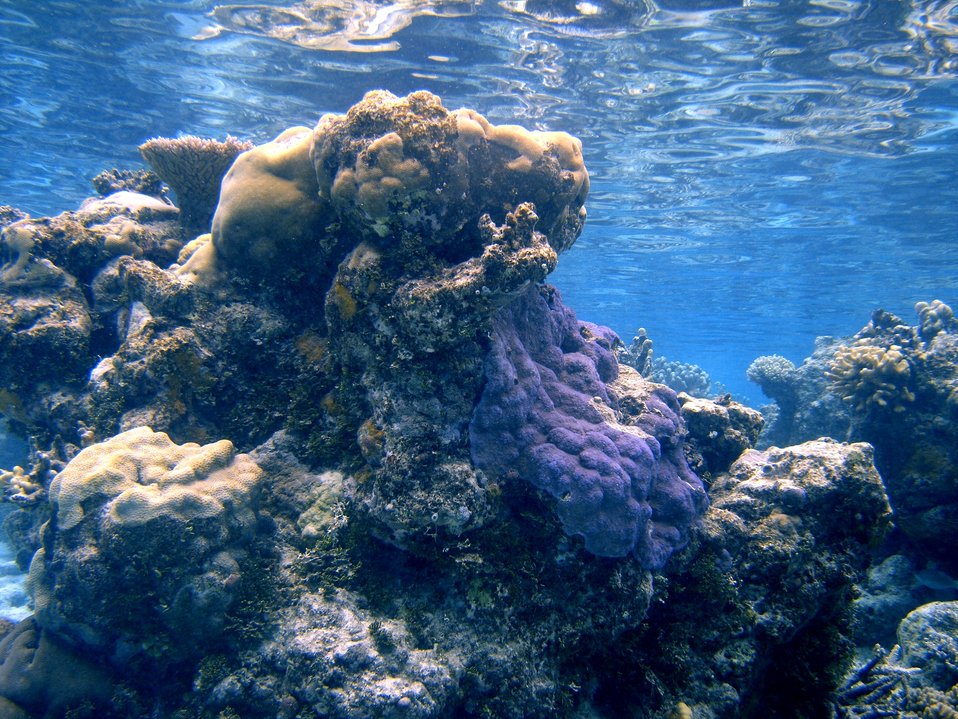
Acroporidae coral Montipora sp. (purple coral)